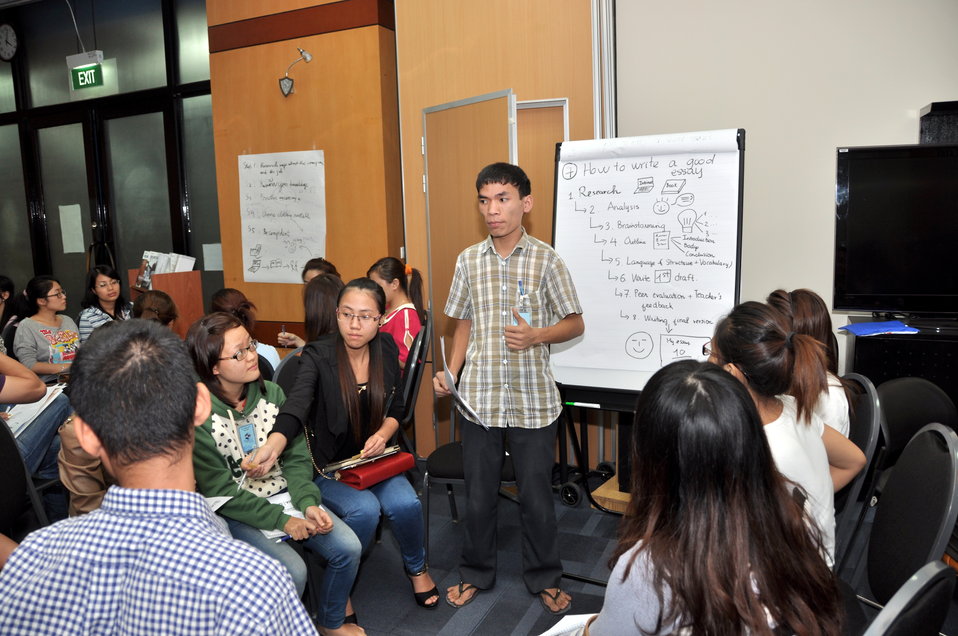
Students join the ‘USAID and Higher Education in Vietnam’ talk

Photo: @USAIDVietnam, November 19, 2012